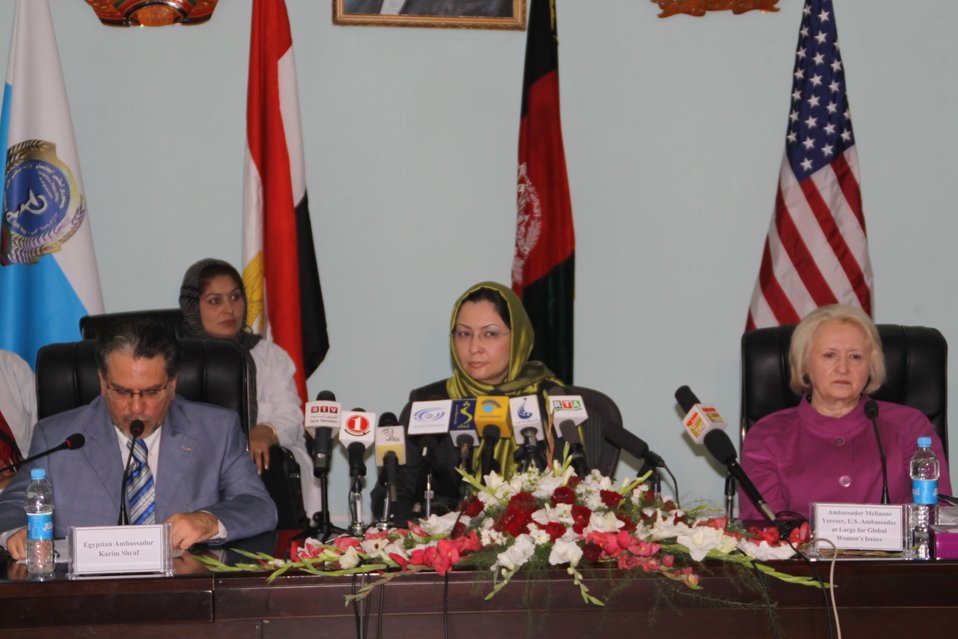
Egypt Joins Afghanistan and the United States